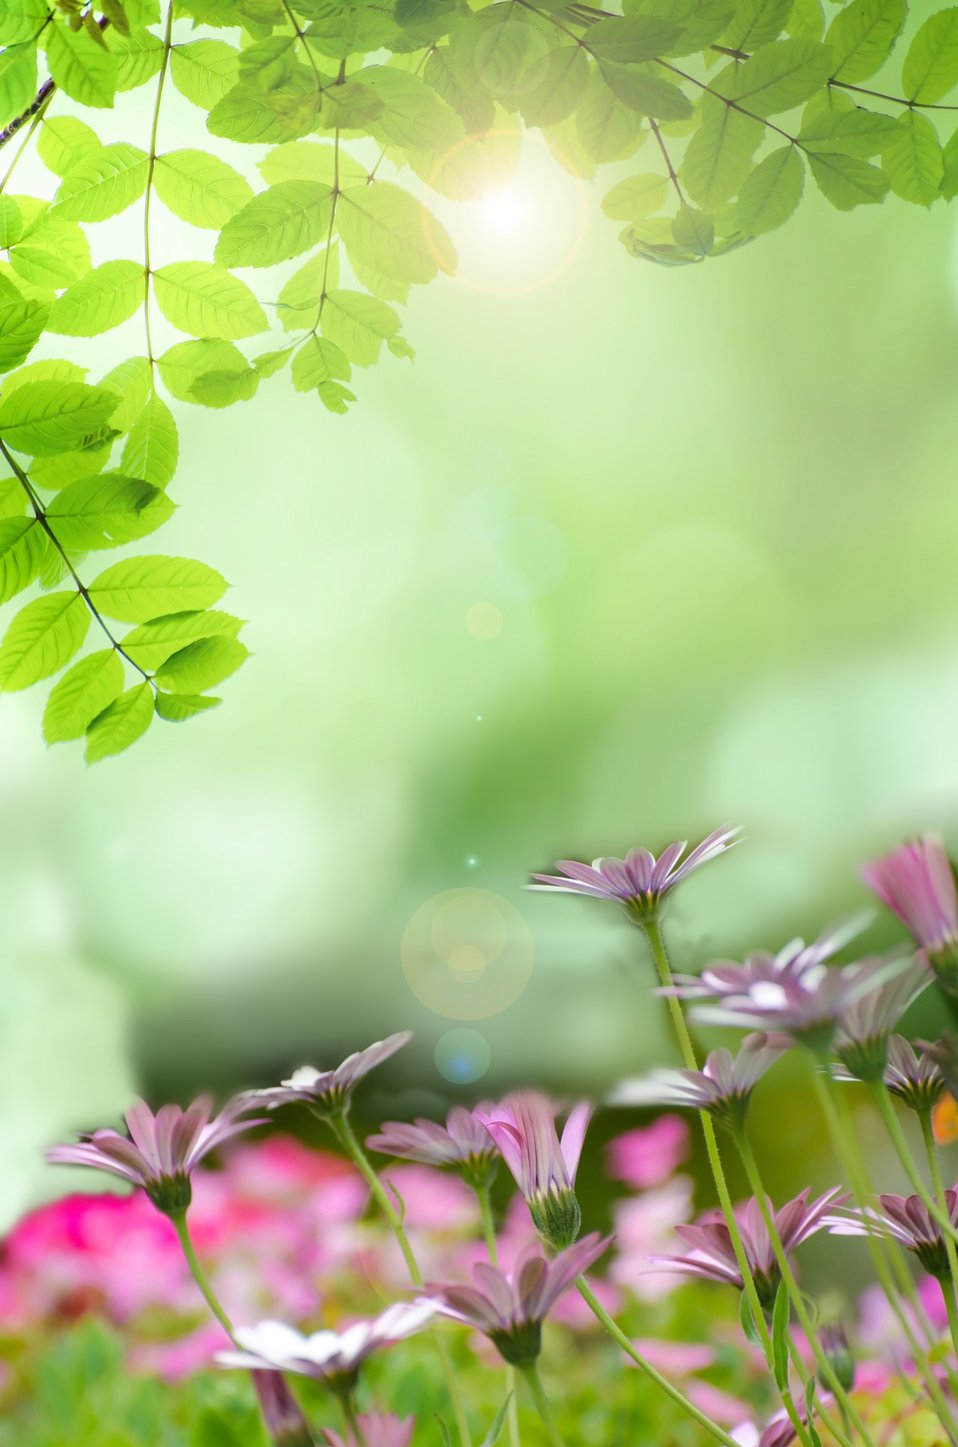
Natural backgrounds with flowers.